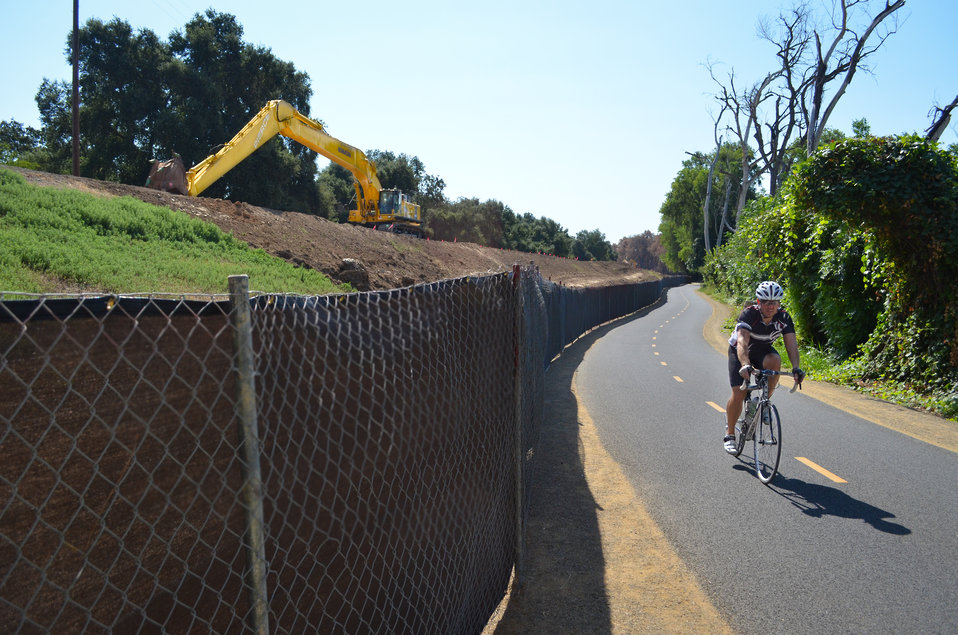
North Sacramento levee work underway

U.S. Army Corps of Engineers Sacramento District levee work is underway Aug. 21, 2013 along the north bank of the American River, just east of its confluence with the Natomas East Main Drainage Canal in north Sacramento, Calif. Complicating the project to install 3,300 linear feet of seepage wall in the levee are land easement rights, an inactive railroad line and an assortment of buried utilities that obstructed the Corps’ work near here more than a decade ago.